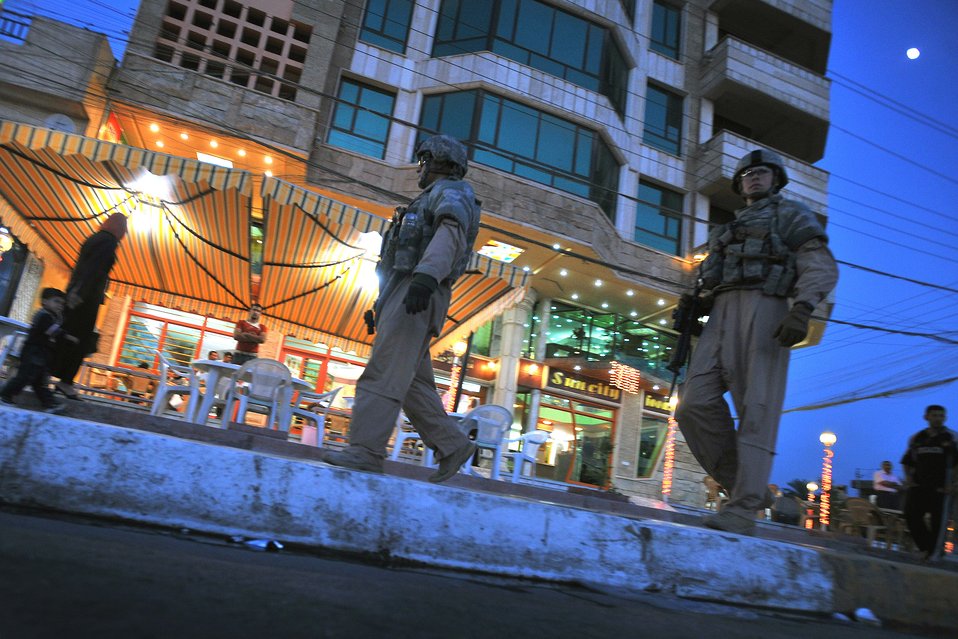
Night patrol in Iraq

U.S. Airmen accompany Iraqi police officers Nov. 8 on a walking patrol handing out flags and leaflets in the Saydiyah community of southern Baghdad, Iraq.